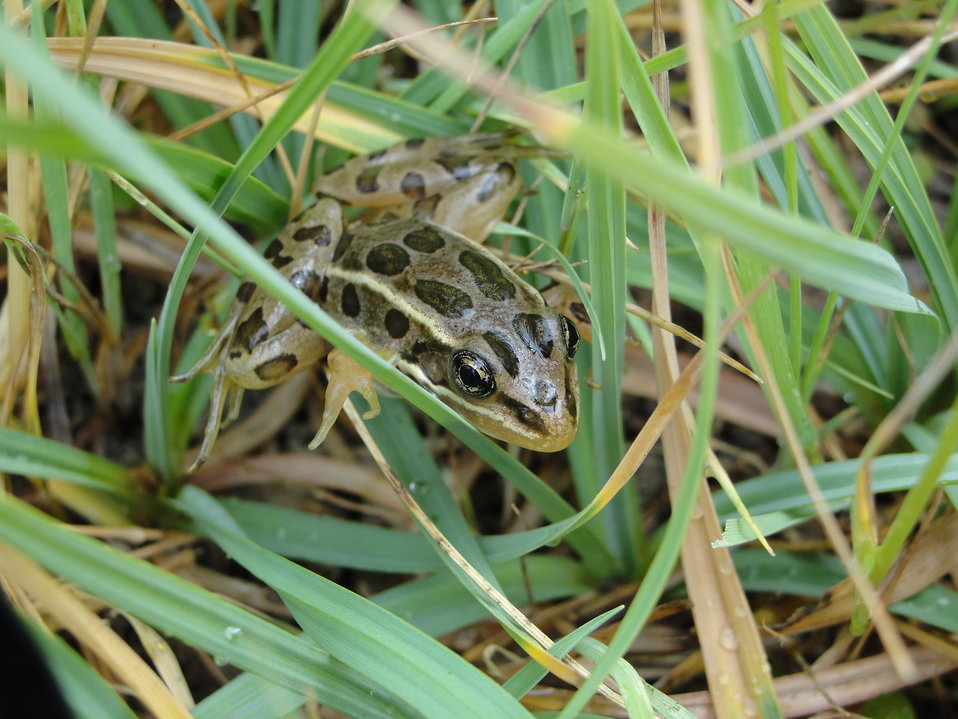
Northern leopard frog (Rana pipiens )occurring in Spring Valley, Nevada. Date of photo 5-18-2010.